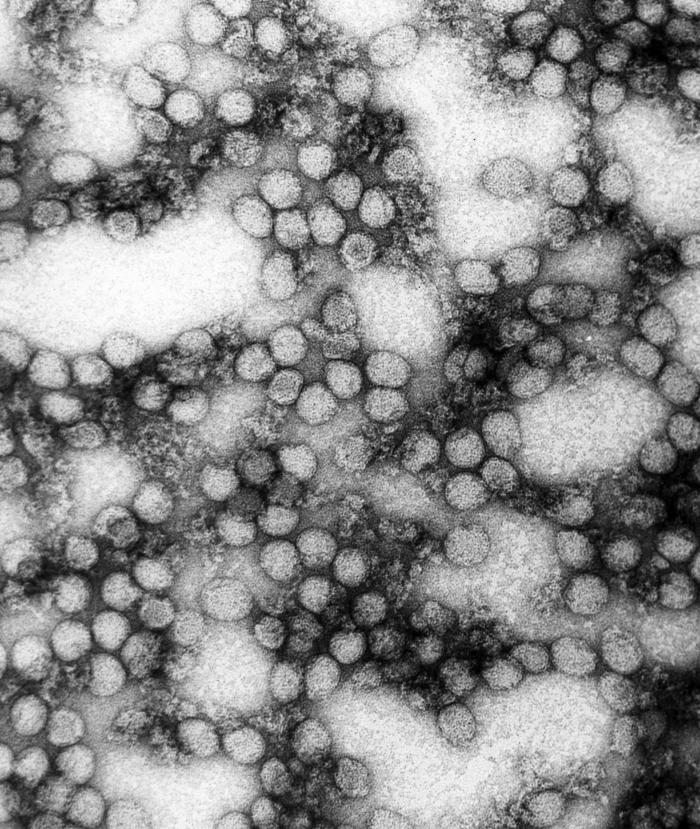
This photomicrograph shows multiple virions of the yellow fever virus at a magnification of 234,000x.